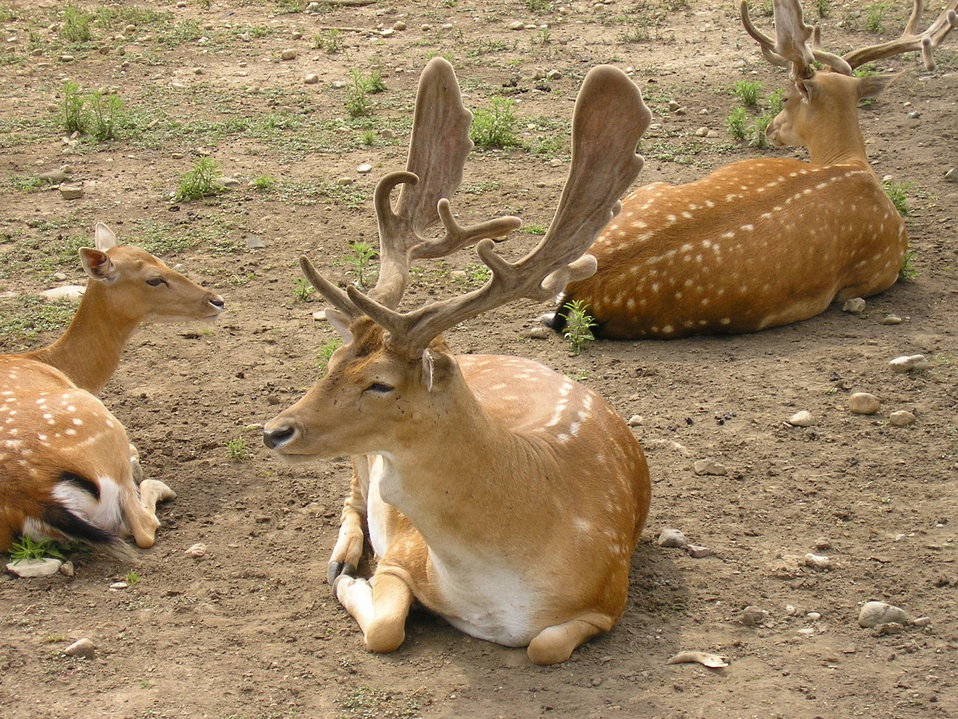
Italiano: Maschio di it:daino, it:Parco degli Aironi Cinerini, comune di it:Gerenzano, provincia di it:Varese